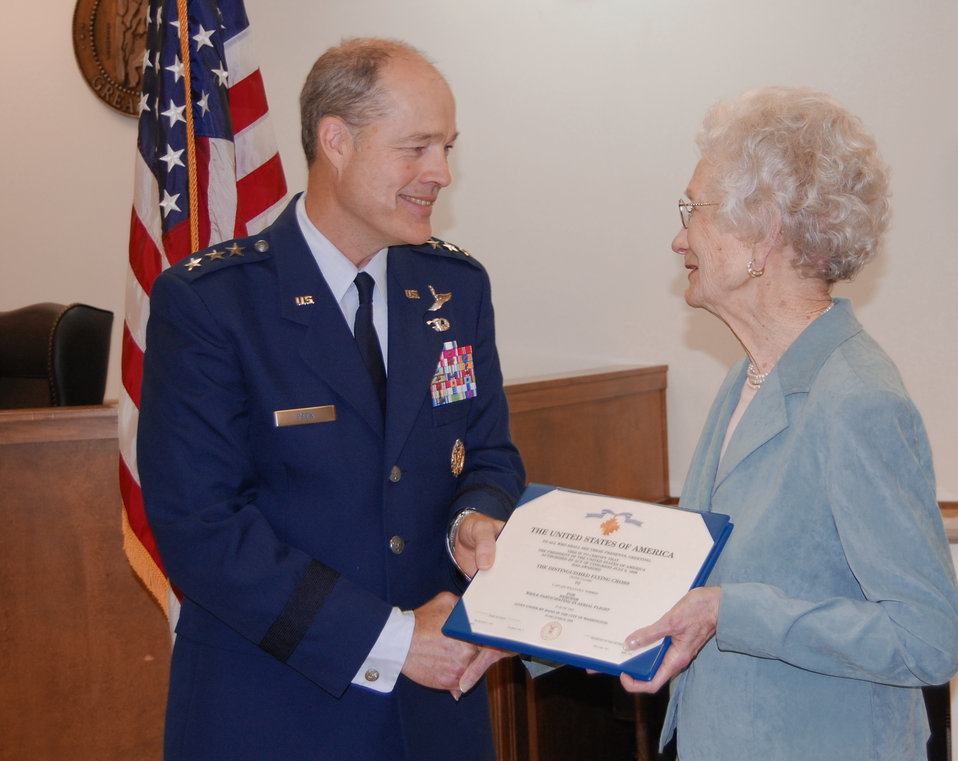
Widow receives husband's World War II medal

Lt. Gen. Allen Peck, Air University commander, presents Mrs. Doris Norred with her late husband's Distinguished Flying Cross with Valor April 13. Capt. William Norred's military records were reviewed, and it was determined he earned the DFC on a combat mission during World War II.